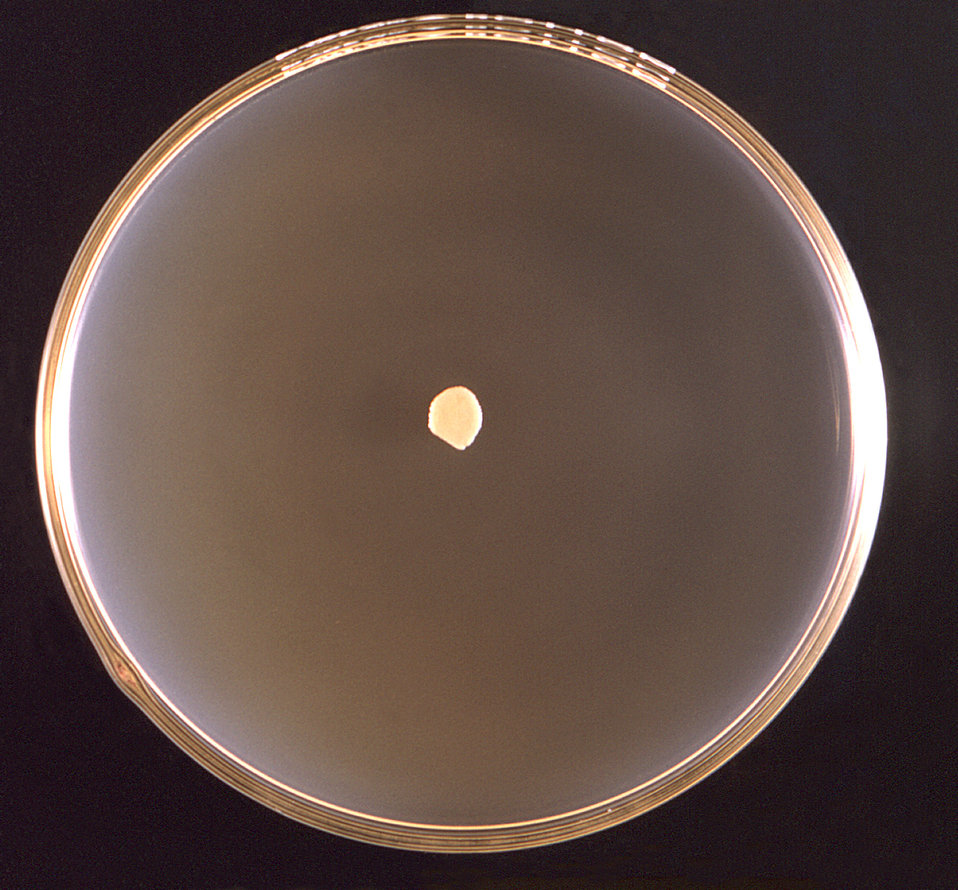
This 1971 image depicted a frontal view of a Petri dish culture in which a small colony of Prototheca wickerhamii algal organisms had been cultivated.